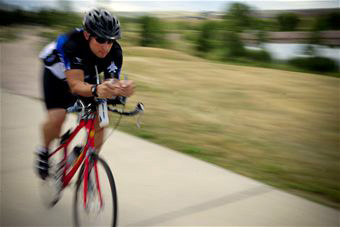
Sergeant rides to cure

Tech. Sgt. Kory Lindsey rides his bicycle Aug. 16, 2010, at Ellsworth AFB, S.D. Sergeant Lindsey is an air traffic control journeyman with the 28th Operations Support Squadron there. He will participate in a ride to raise money for a cure for multiple sclerosis and his goal is to better the life of a close family member and others who are affected by the disease.